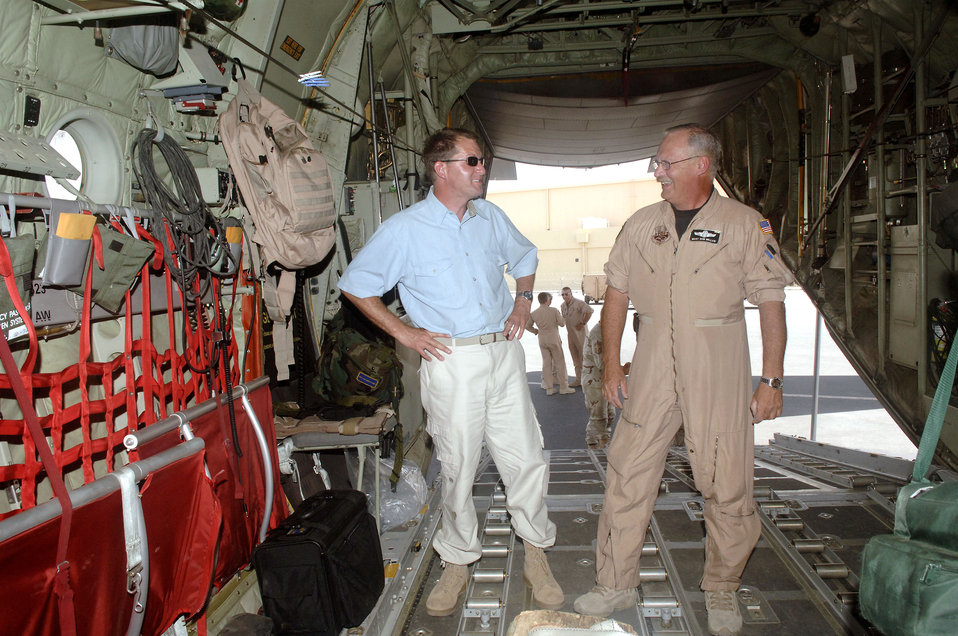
Author, activist speaks with Airmen

Author and activist Dave Pelzer talks with Master Sgt. Don Miller at a forward operating base in Southwest Asia on Tuesday, June 27. Mr. Pelzer visited troops at three locations to spread encouragement and forgiveness. Sergeant Miller is a C-130 Hercules loadmaster with the 746th Expeditionary Airlift Squadron.